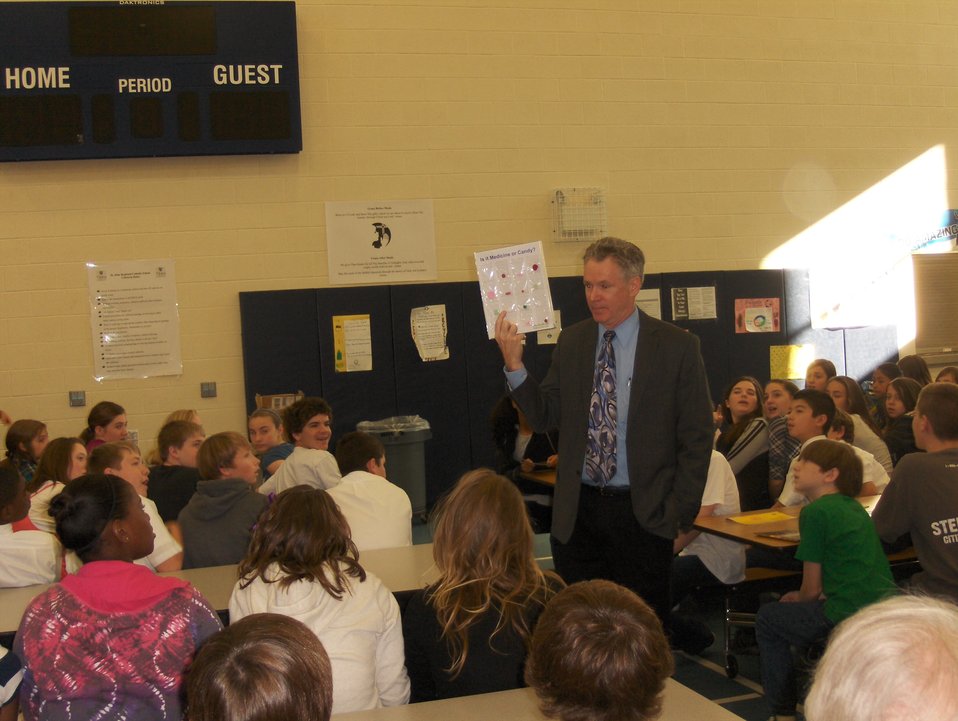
NDFW Event in Frederick, Maryland

Seventh and eighth graders in St. John Regional Catholic School listen to the Pharmacist Dave Fulton during a school assembly during National Drug Facts Week.